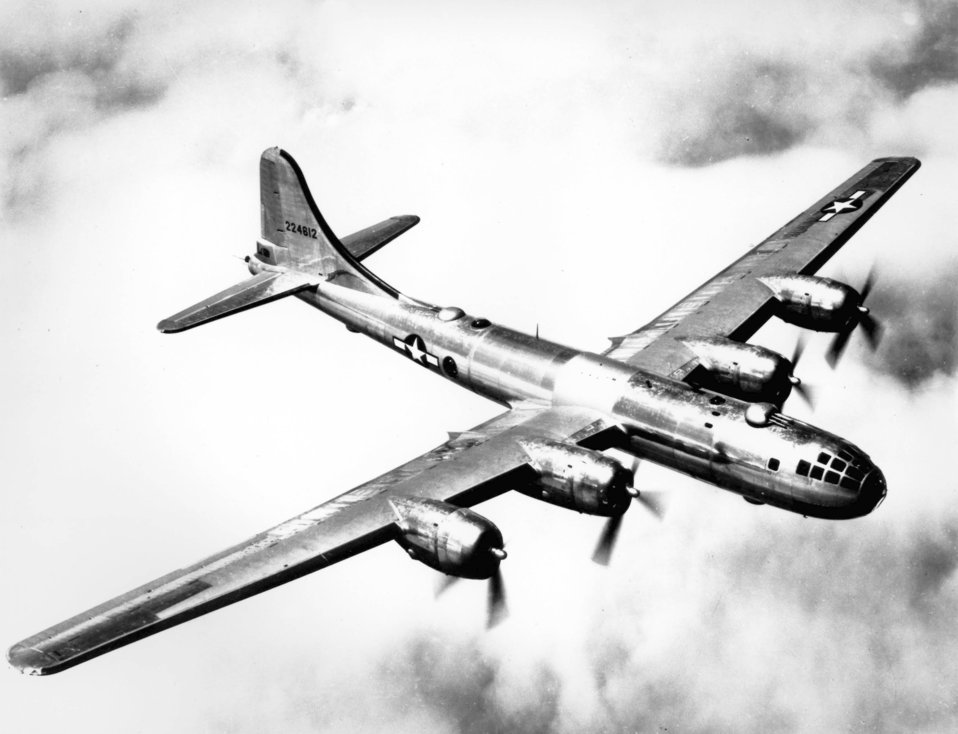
B-29

1940's -- Boeing B-29